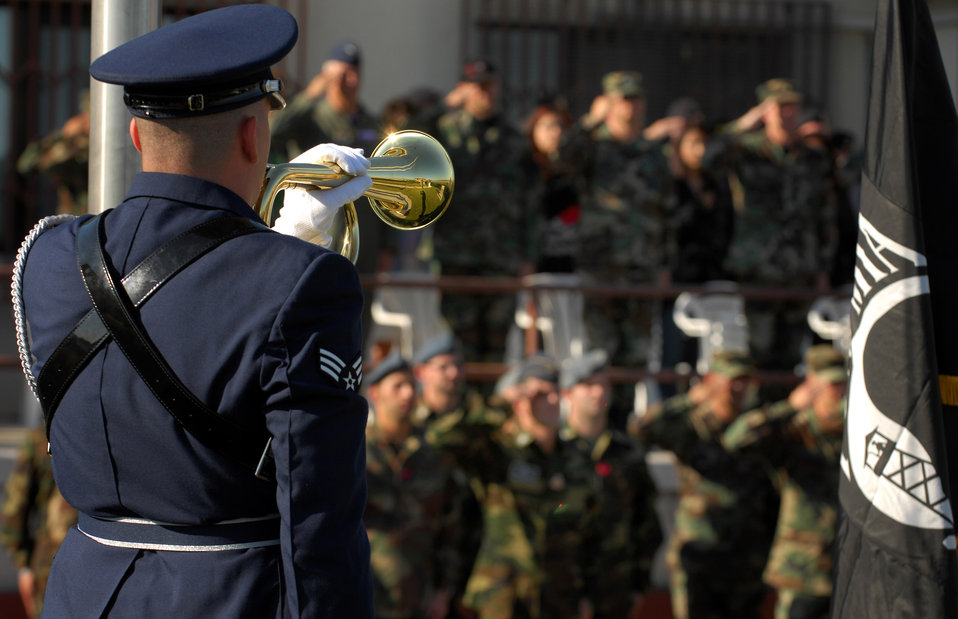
Remembering POWs, MIAs at Aviano

Senior Airman Joshua Petersen plays